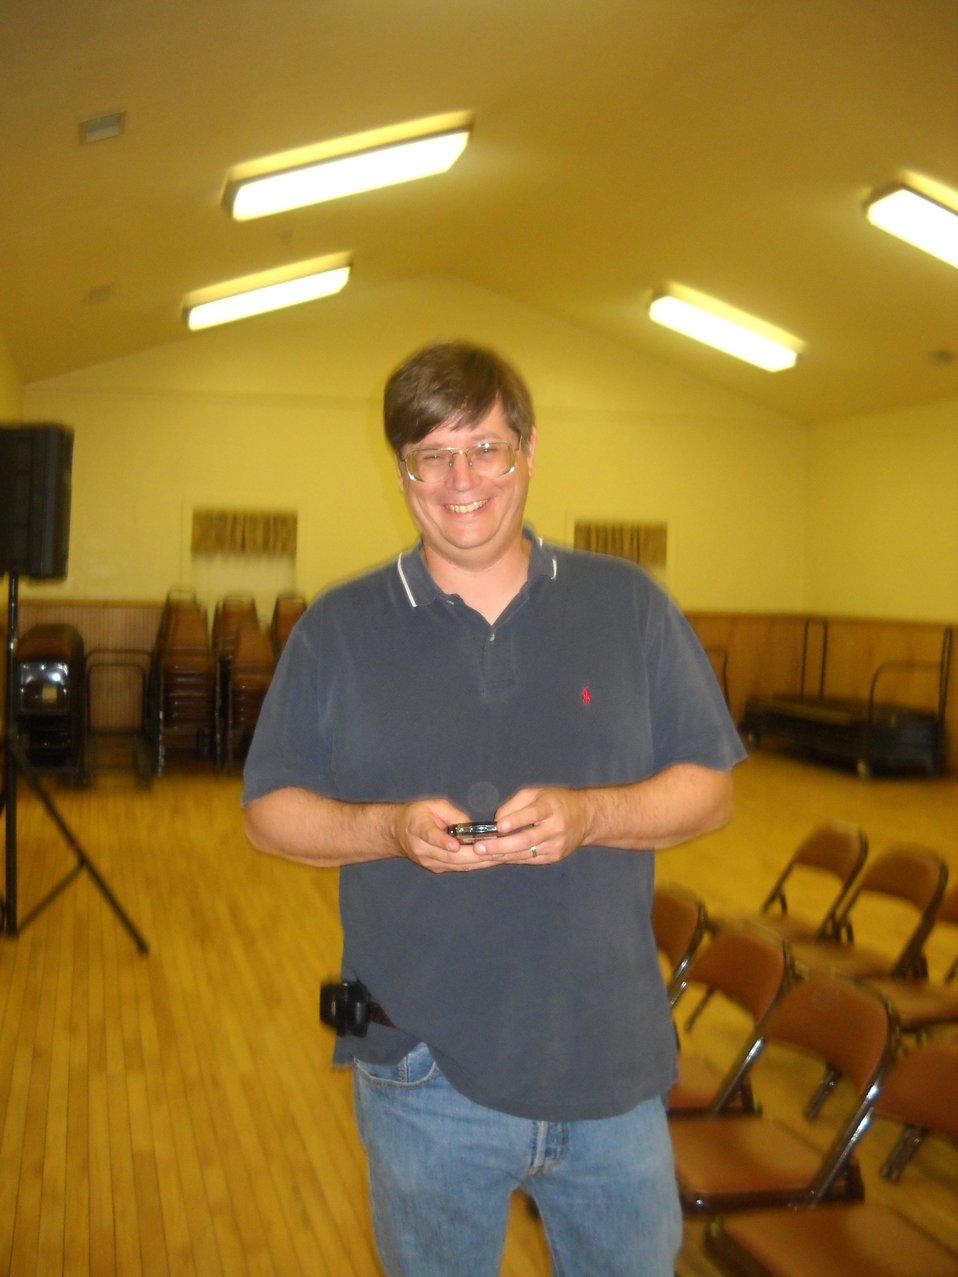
Field Hearing on Broadband Adoption 10-6-09